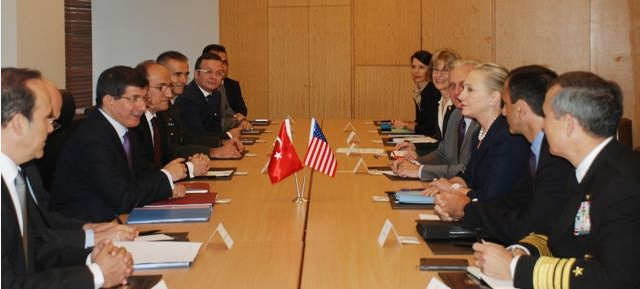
Secretary Clinton Meets With Turkish Foreign Minister Davutoglu

U.S. Secretary of State Hillary Rodham Clinton meets with Turkish Foreign Minister Ahmet Davutoglu in Istanbul, Turkey, on August 11, 2012.